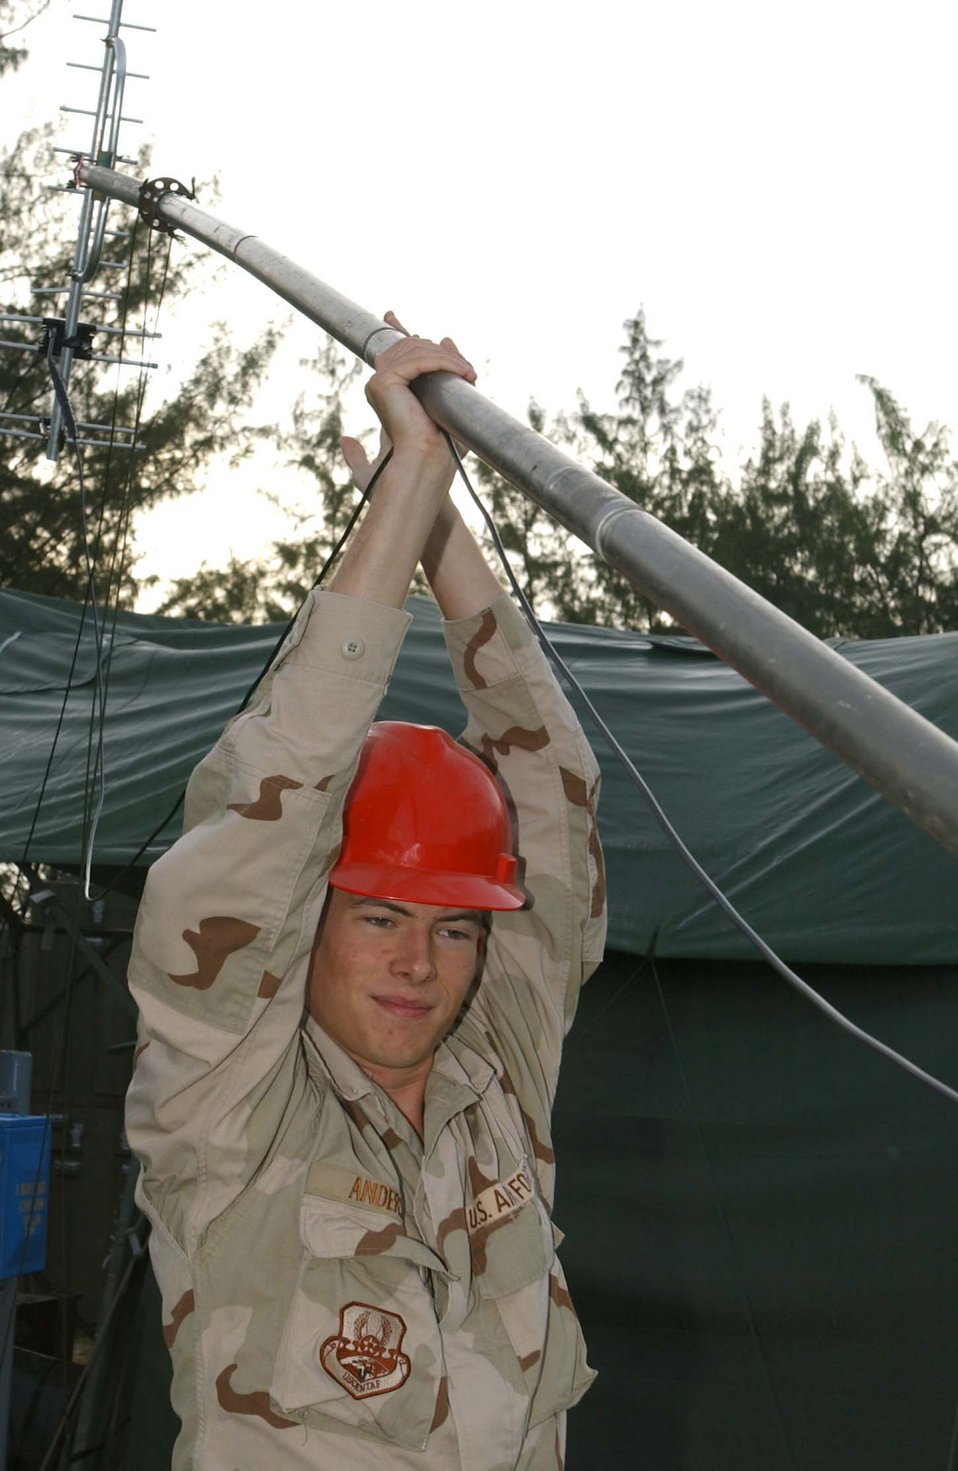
Raising the bar

OPERATION ENDURING FREEDOM -- Airman 1st Class Michael Anderson hoists an antenna used to receive television signals at a forward operating location June 16. Airman Anderson is deployed from Pittsburgh, Pa., and assigned to the 40th Expeditionary Communications Flight.